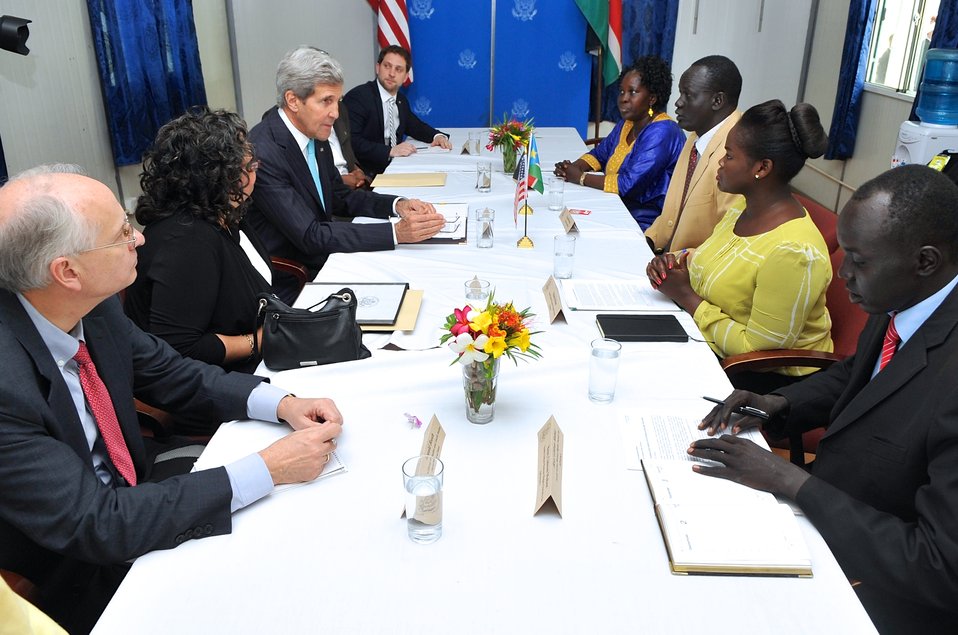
Secretary Kerry Meets With Members of South Sudanese Civil Society

U.S. Secretary of State John Kerry speaks with several members of the South Sudanese civil society after his meeting with President Salva Kiir Mayardit in Juba on May 2, 2014.